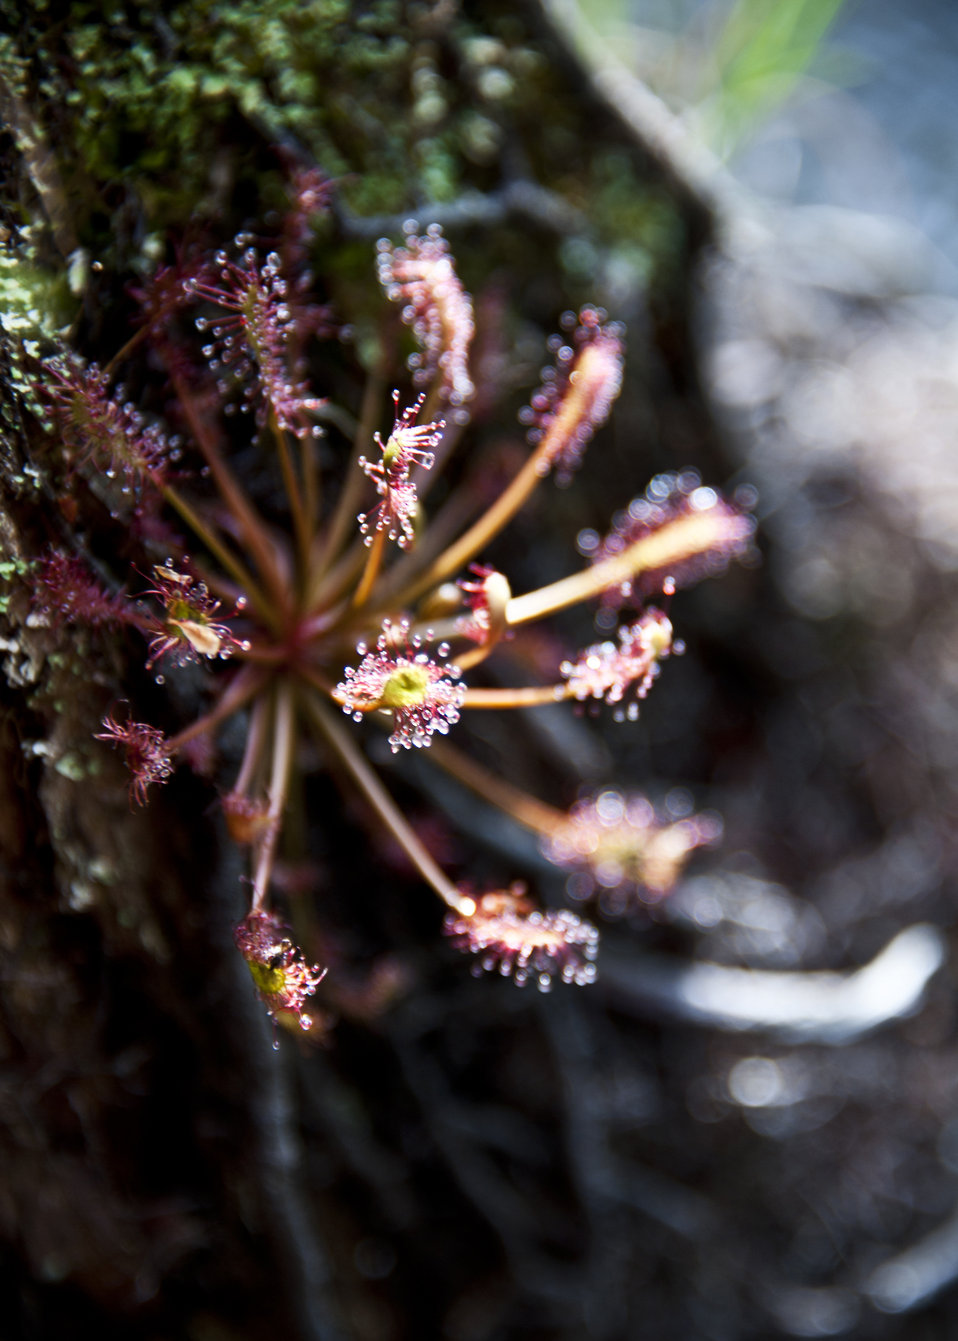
Earth Day Kayak Tour

A carnivorous sundew plant waits for insects on a log along Turkey Creek April 21, 2011, at Eglin Air Force Base, Fla.